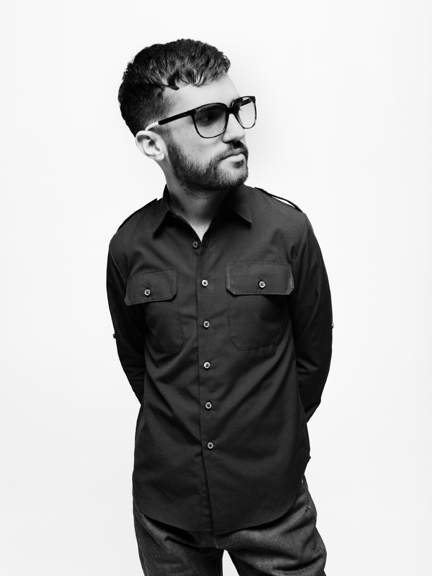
A-Trak (born Alain Macklovitch on March 30, 1982) is a Montreal-born DJ and turntablist.